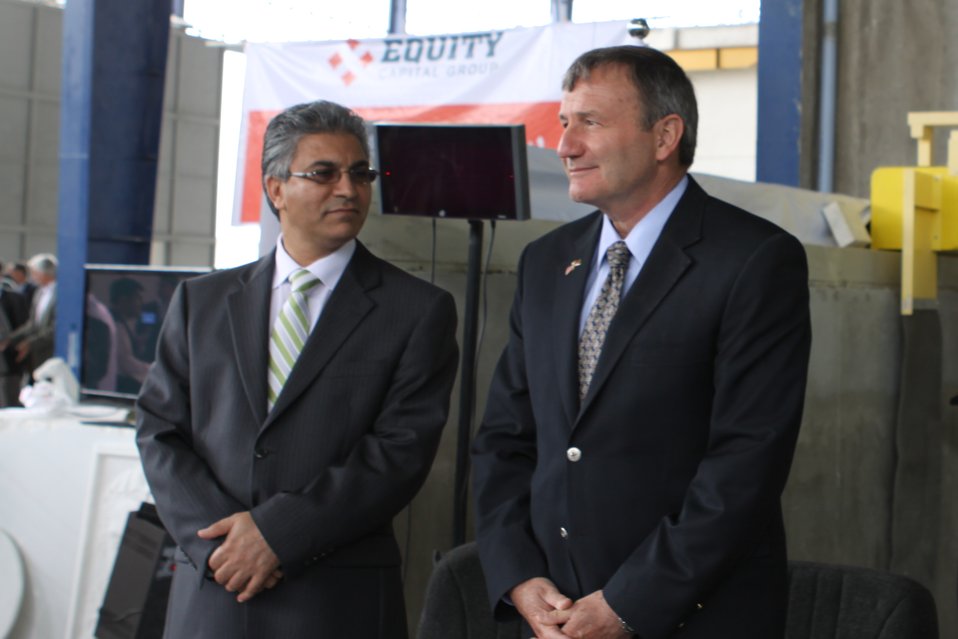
100525 Hirat Marble Conference 107